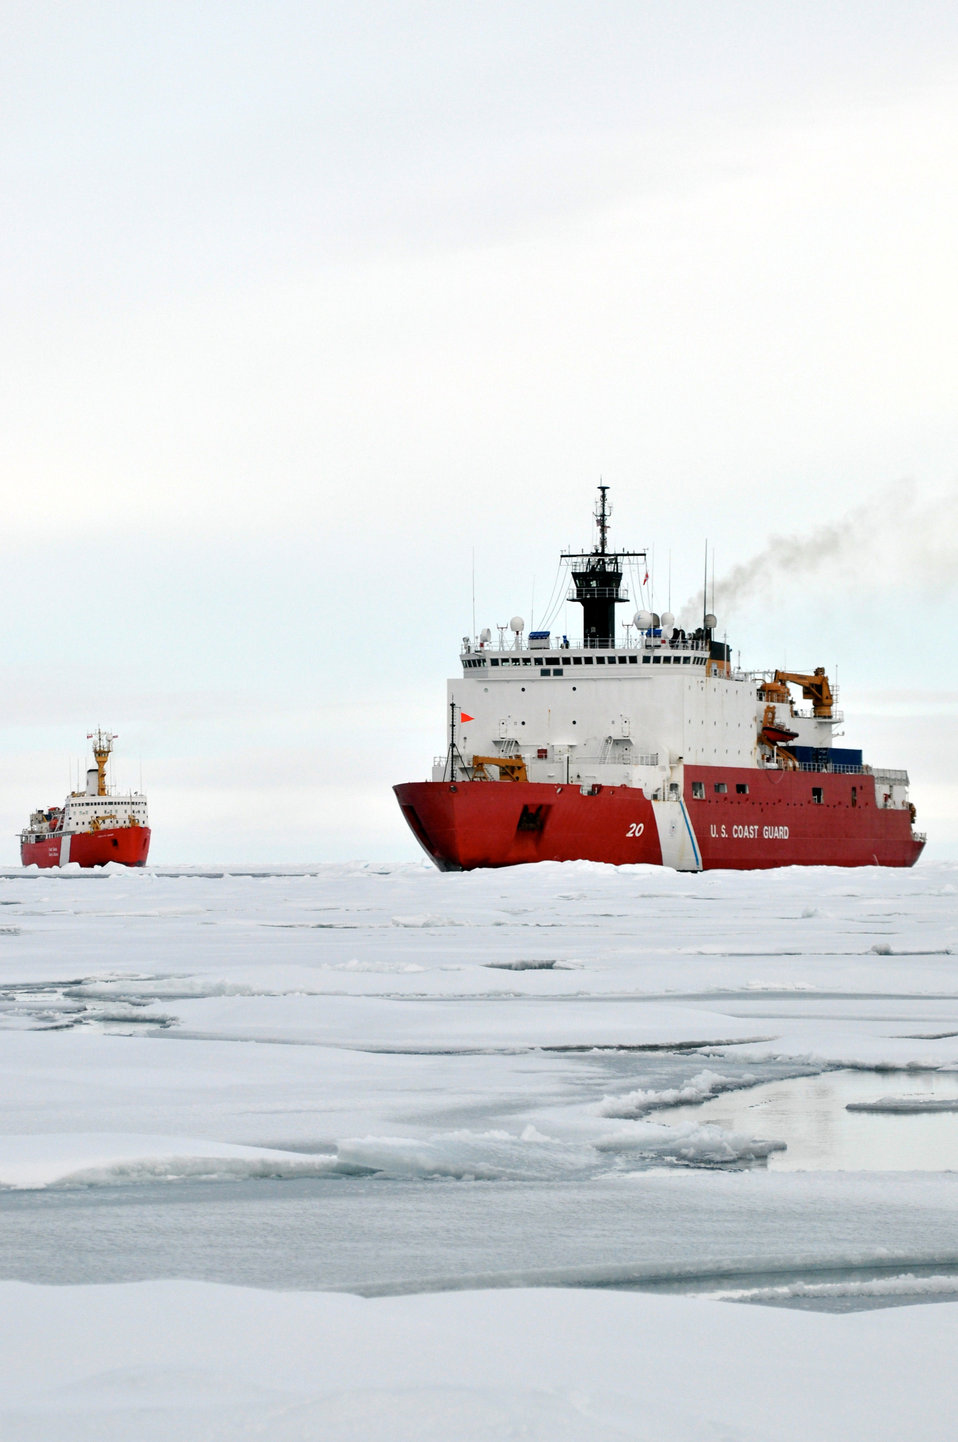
USCG icebreaker HEALY in relatively smooth first-year ice floes followed by the Canadian Coast Guard icebreaker LOUIS S. ST. LAURENT .